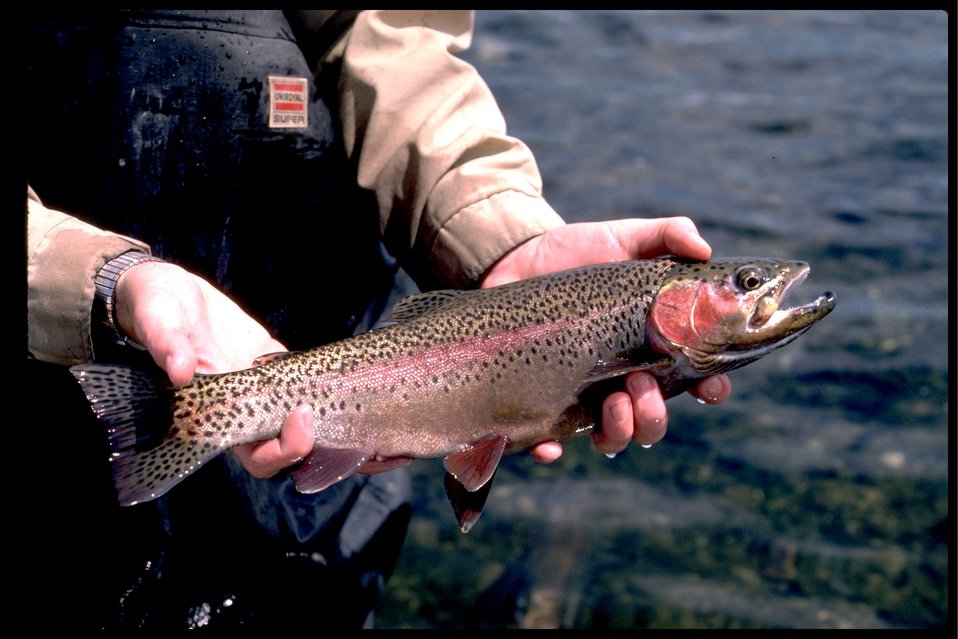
Rainbow trout being held before release